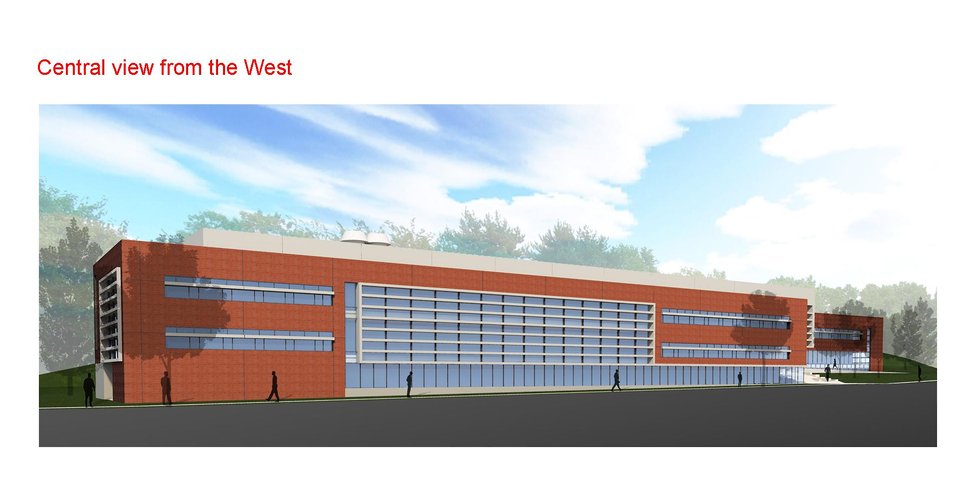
Artist rending of the new building at Oak Ridge National Laboratory to be named Chemical and Materials Sciences Building, view from the west.

The Chemical and Material Sciences Building is made possible by the American Recovery and Reinvestment Act. The funds will support a variety of DOE Office of Science - sponsored construction, laboratory infrastructure, and research projects across the nation. As a part of ORNL's modernization standards, the new facility will be LEED certified by the Green Building Council for excellence in sustainability and low energy consumption. The stimulus funds will accelerate construction and enable the project to be completed in 2011, rather than the 2012 as originally scheduled.